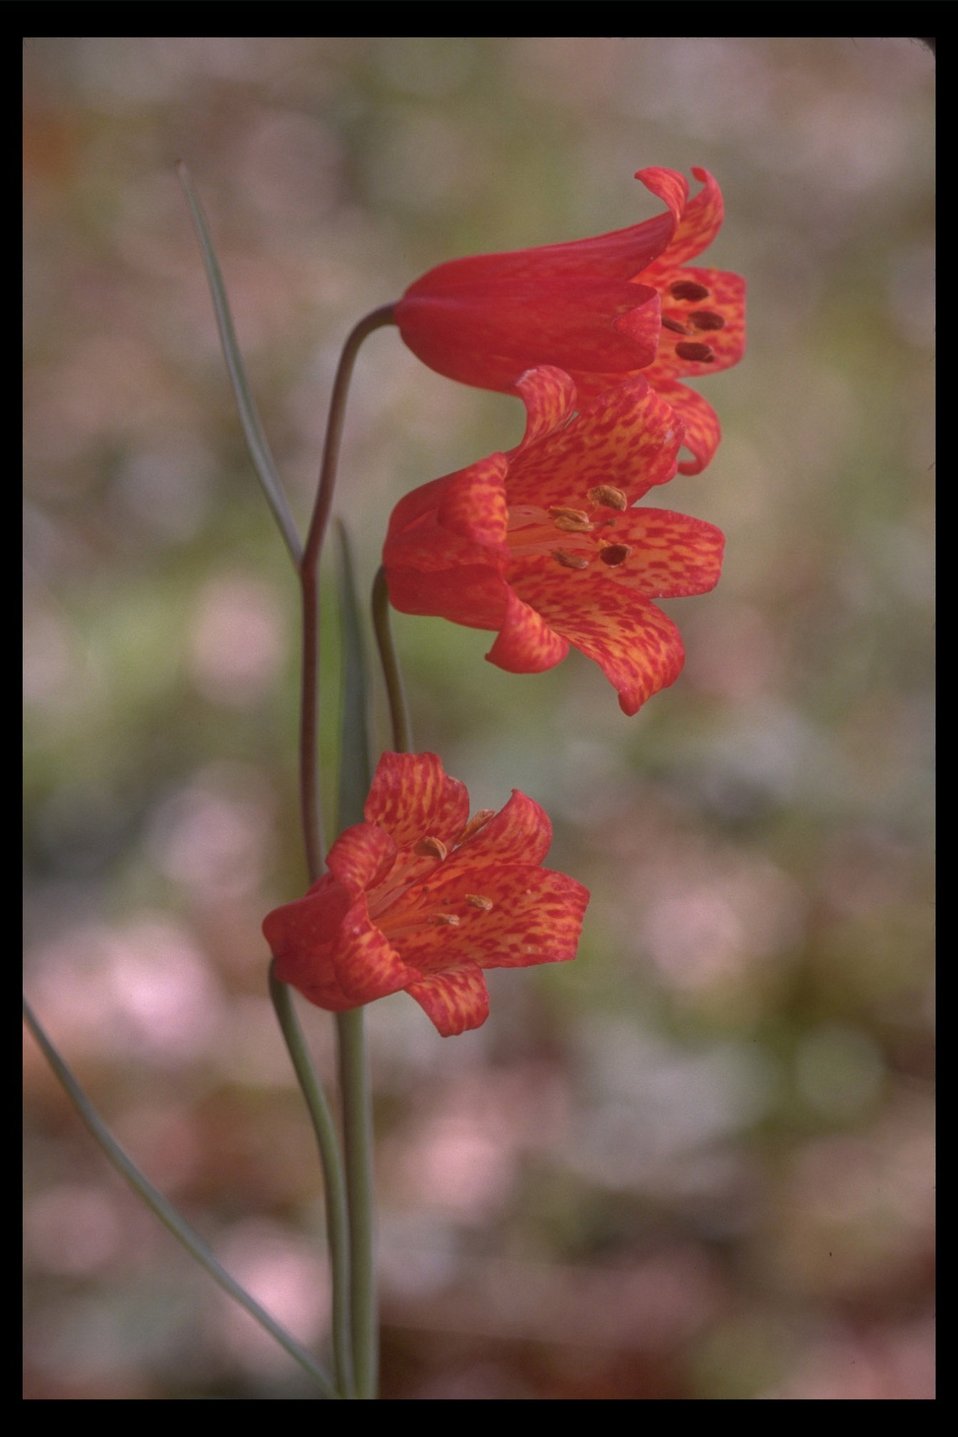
Red Bells, also called Scarlet Fritillary, (Fritillaria recurva) at Upper Table Rock.